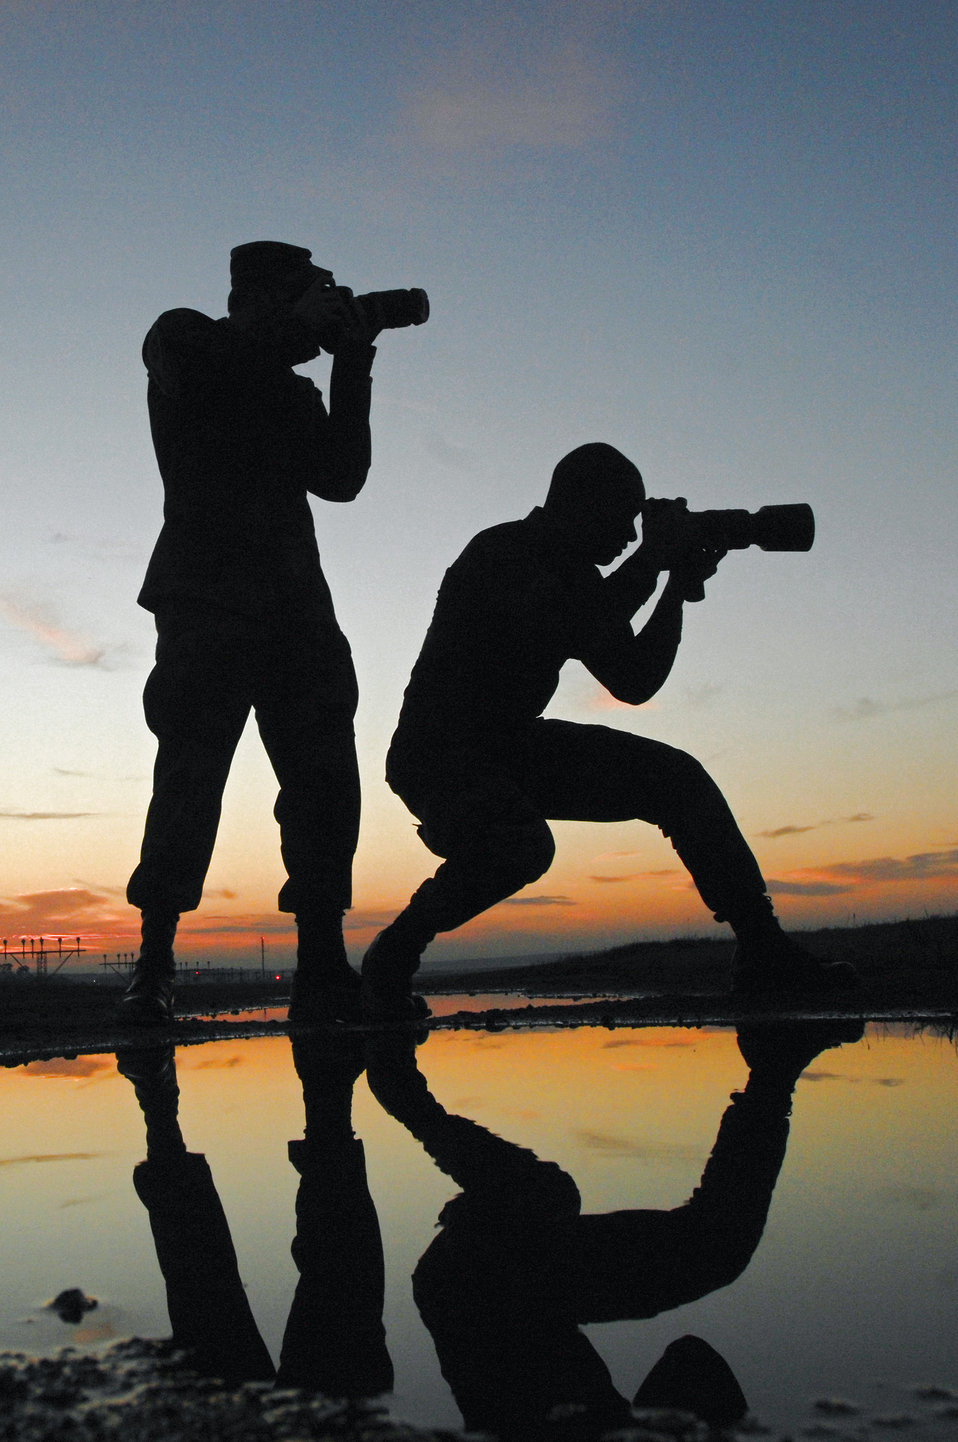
Getting the perfect photo

Airmen 1st Class Tony R. Ritter and Kenny Holston capture images of incoming aircraft Nov. 3 at Ramstein Air Base, Germany. They are 435th Air Base Wing public affairs photographers.